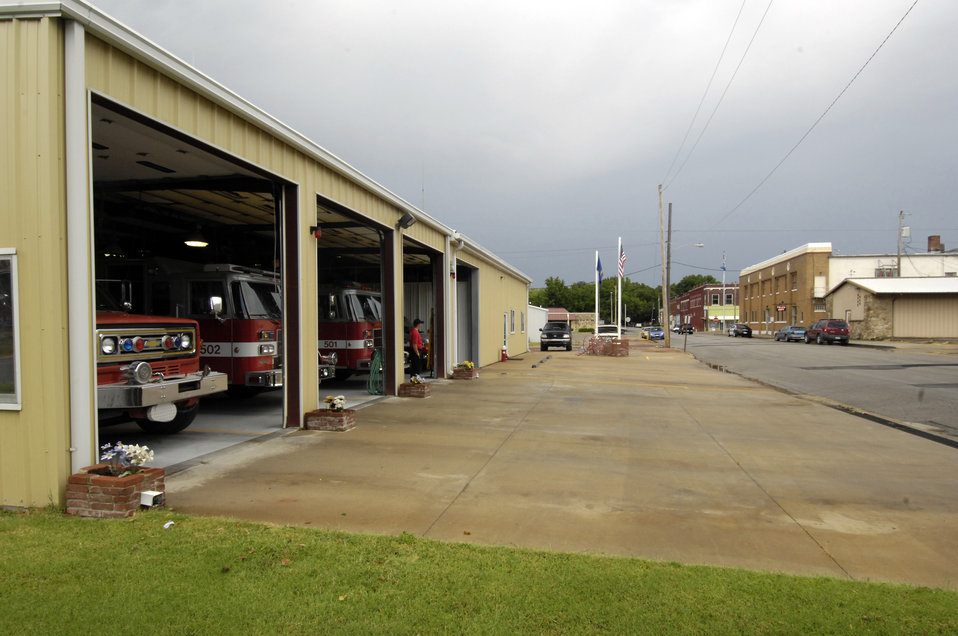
Fire trucks stand at the ready in Cherryvale, Kansas on August 17, 2009.